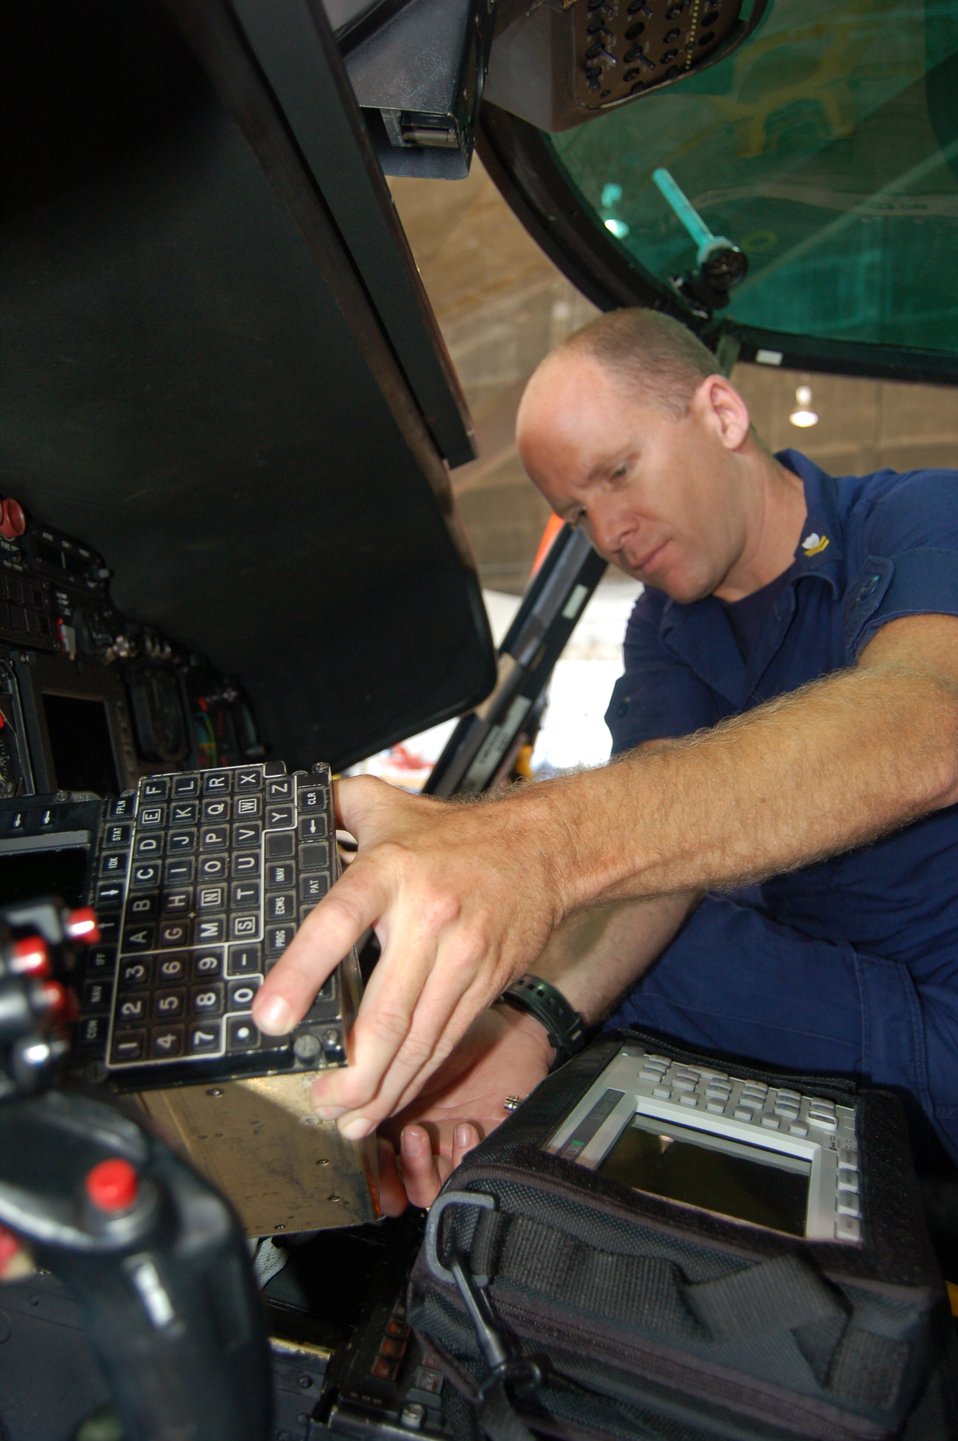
Blue uniforms continue command over Puerto Rico sky

Coast Guard Petty Officer 3rd Class Damon Miller repairs the global positioning system on an HH-65C Dolphin helicopter March 20 at Coast Guard Air Station Borinquen, Puerto Rico. Petty Officer Miller is an aircraft electronics technician. The Coast Guard provides a search and rescue capability for 1.2 million square miles around the Caribbean.